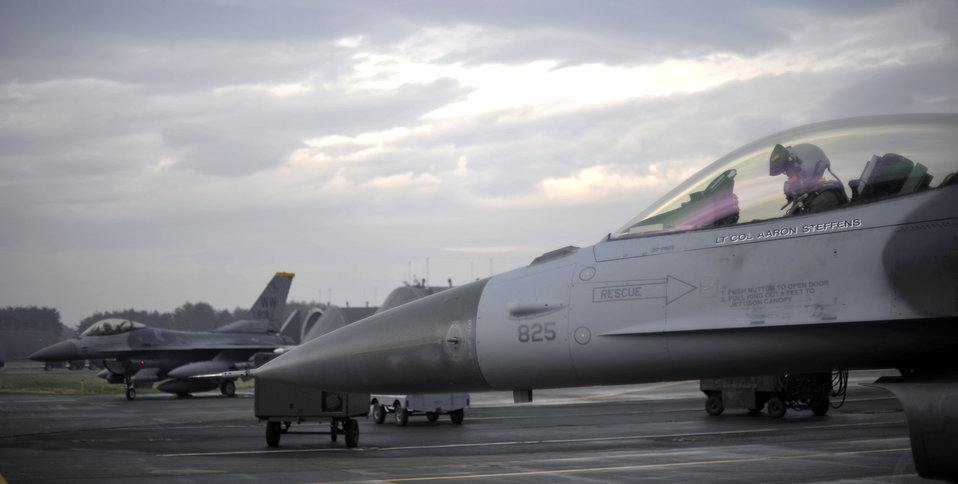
Misawa's Fighting Airmen deploy to South Korea

Lt. Col. Aaron Steffens prepares to taxi May 7, 2010, at Misawa Air Base, Japan. He was one of 15 pilots from the 14th Fighter Squadron that deployed to South Korea. Colonel Steffens is the 14th Fighter Squadron commander.